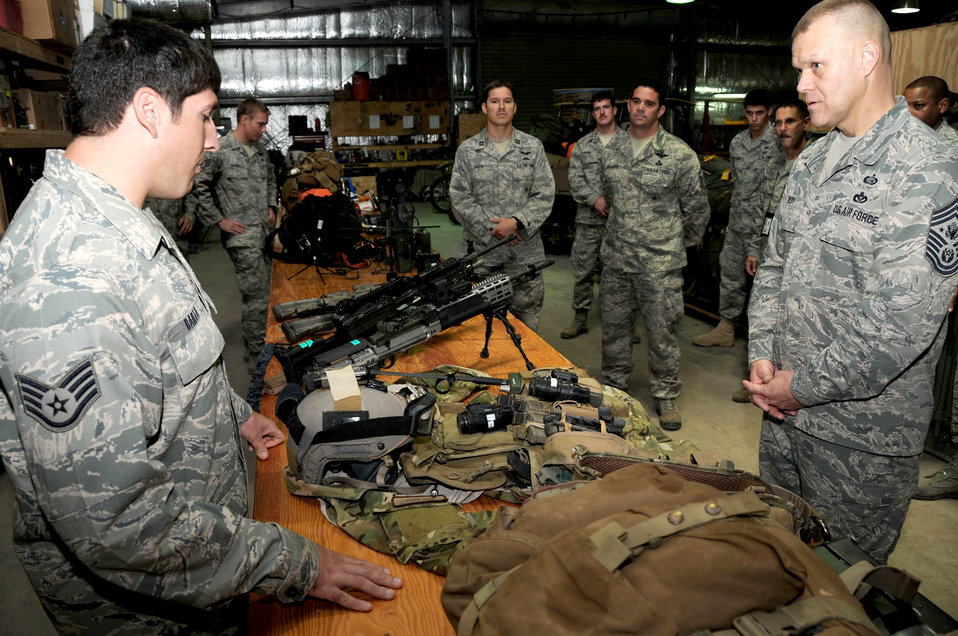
CMASF Roy at HOA

Staff Sgt. Seth Barta briefs Chief Master Sgt. of the Air Force James A. Roy on pararescue equipment Oct. 13, 2010, at Camp Lemonnier, Djibouti. Chief Roy visited work centers around camp to see firsthand the role Airmen play in the mission of Combined Joint Task Force-Horn of Africa. Sergeant Barta is assigned to the 82nd Emergency Rescue Squadron.